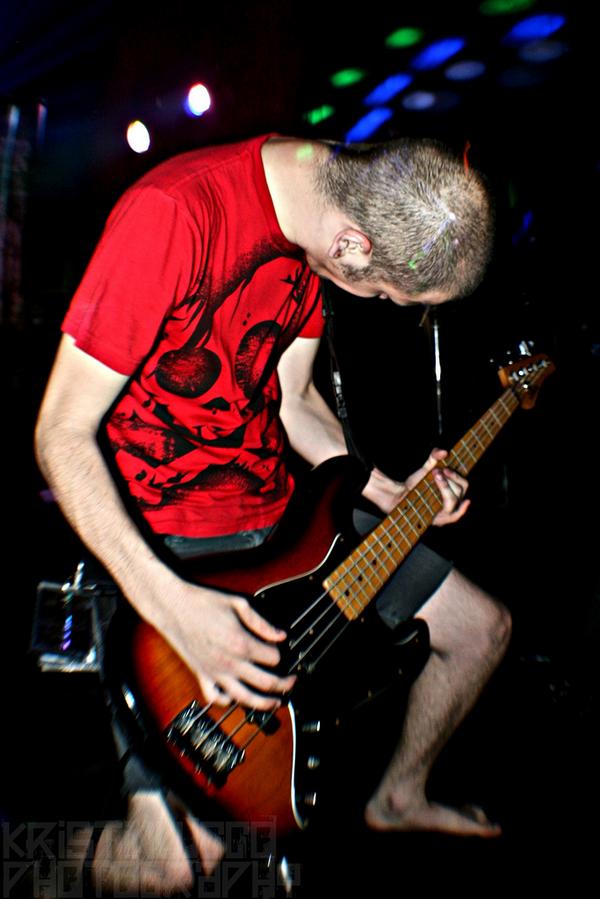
Ryan Neff of Miss May I live at Java Jazz in Houston, Texas